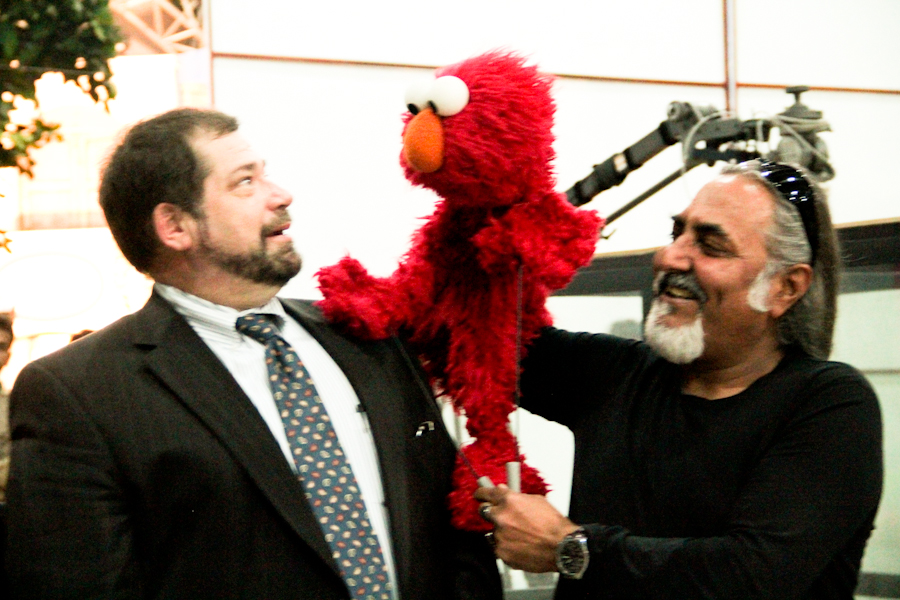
Sim Sim Hamara

Lahore, February 20, 2012 - Deputy Director of the USAID Mission in Pakistan Karen Freeman and Director of the Pakistan Desk at the USAID headquarters in Washington, Jeffrey Bakken visit the Sim Sim Hamara Film Studio in Lahore.